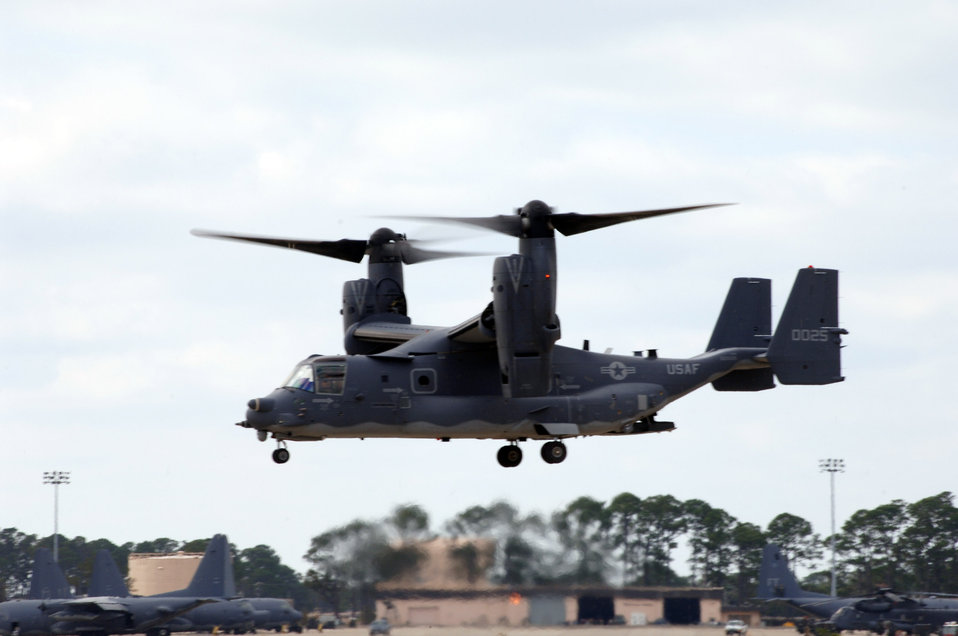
Heritage to horizons

The CV-22 Osprey flies by during its unveiling ceremony at Hurlburt Field, Fla. on Nov 16. The arrival of the CV-22 to Air Force Special Operations Command is part of Hurlburt Field's Heritage to Horizon commemoration, reflecting on the heritage of air commandos, reaffirming the commitment to the war on terrorism and resolving to continually expand capabilities. The commemoration also includes marking the re-designation of the 16th Special Operations Wing to the 1st SOW and the Air Force's 60th birthday.